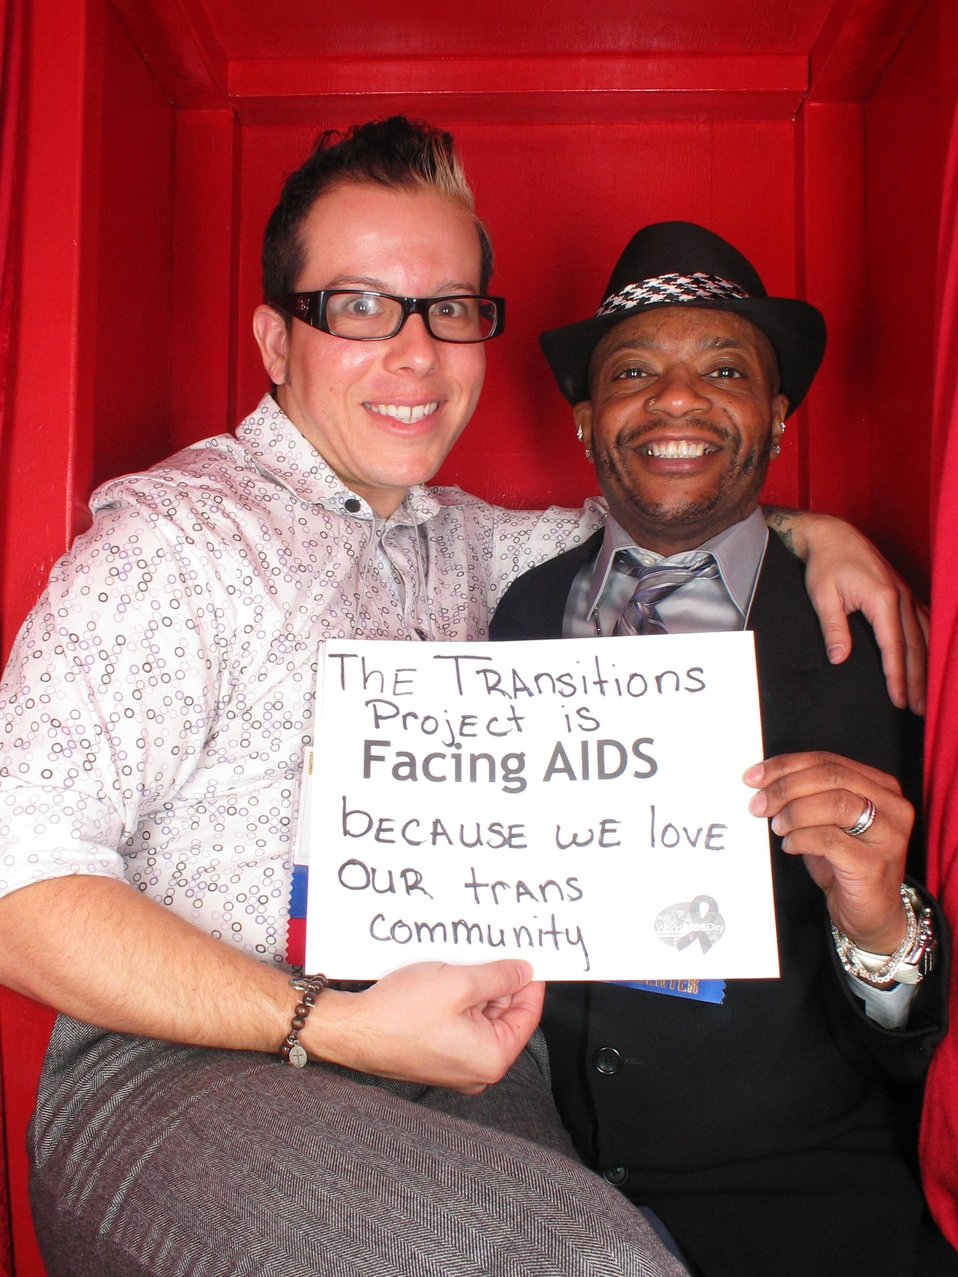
The Transition Project is Facing AIDS because we love our trans community.